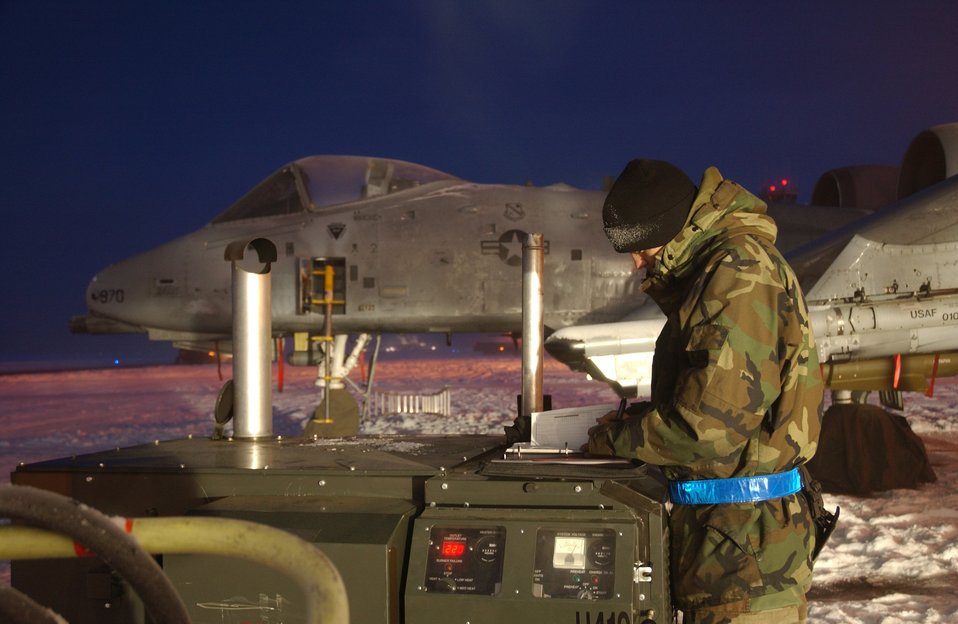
Baby, it's cold outside

EIELSON AIR FORCE BASE, Alaska -- Senior Airman Daniel Jahnke completes paperwork while preparing an O/A-10 Thunderbolt II here for a training mission Dec. 21. Airman Jahnke is assigned to the 354th Maintenance Squadron.